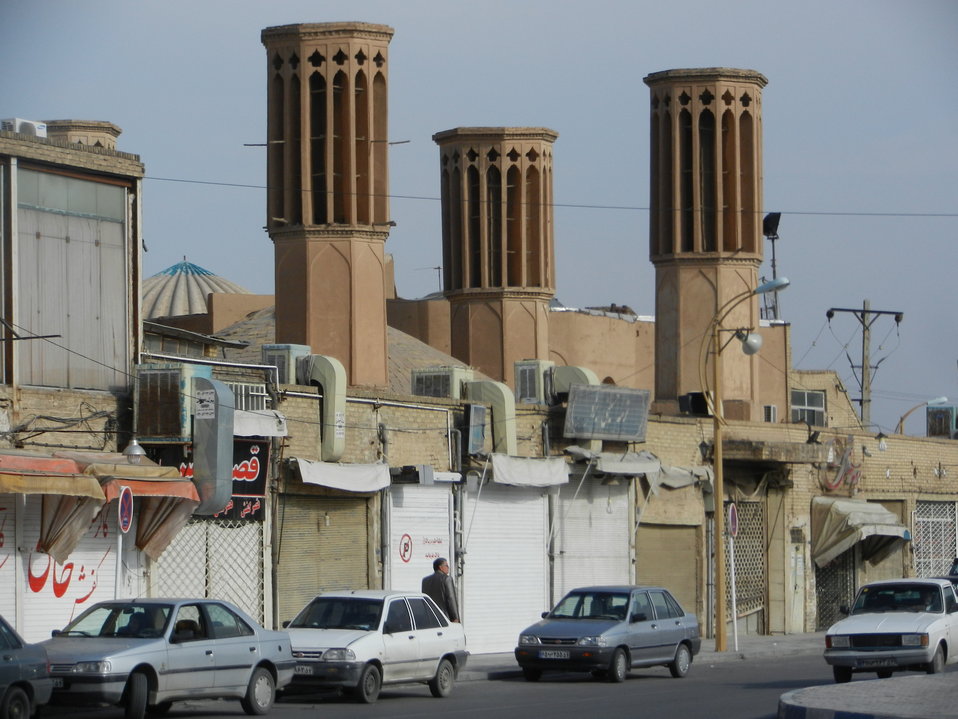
Slovenščina: Yazd, vetrovni stolpi, Iran.